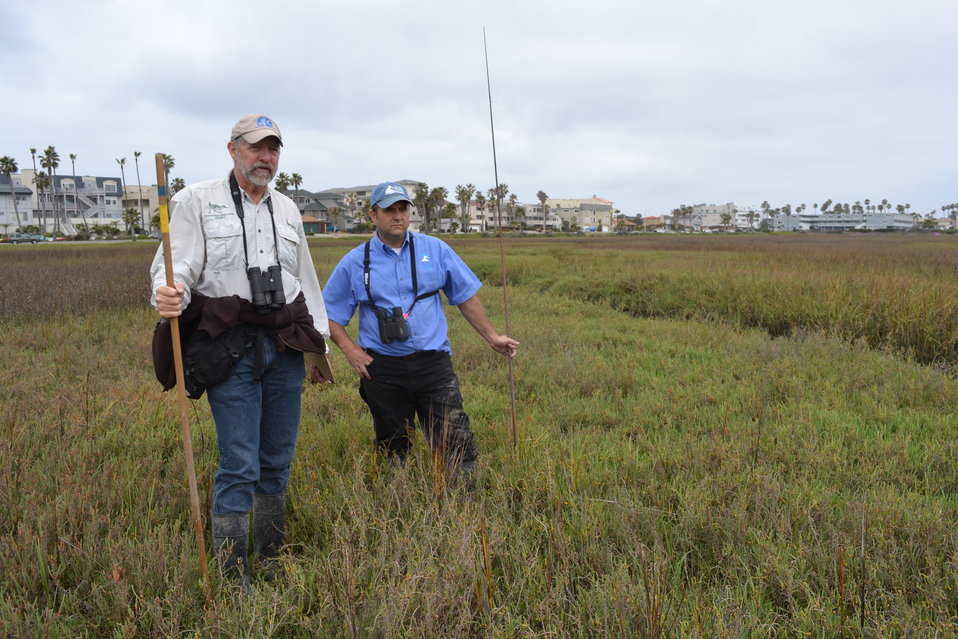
Searching for clapper rail nests

Dr. Richard Zembal (Otay County Water District, and founder of the Light-footed Clapper Rail Study & Management Team), and Charles Gailband (Communications Director at the Chula Vista Nature Center) discuss which directions they will go in order to find LFCR nests.